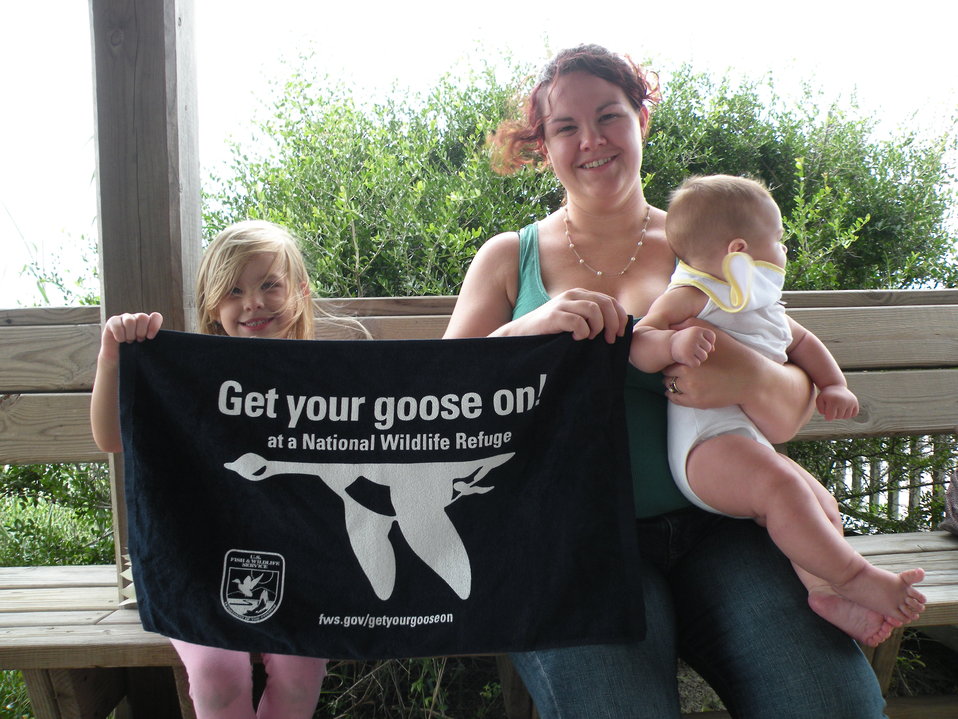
Get Your Goose On!

Visitors at PINWR enjoying the refuge stop to Get Their Goose On!

Ashlyn Knight/USFWS